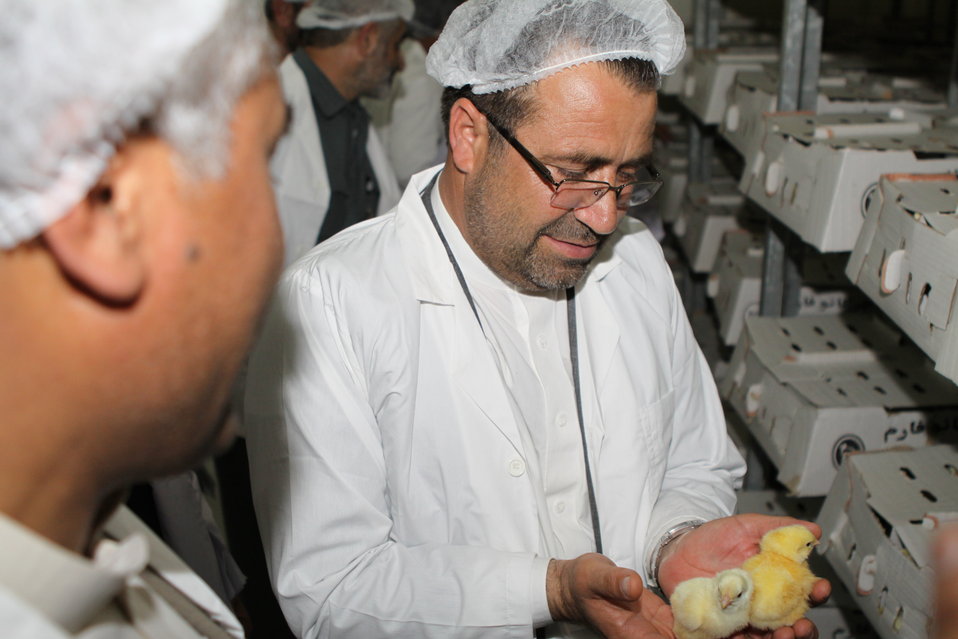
Bolan Poultry Farm